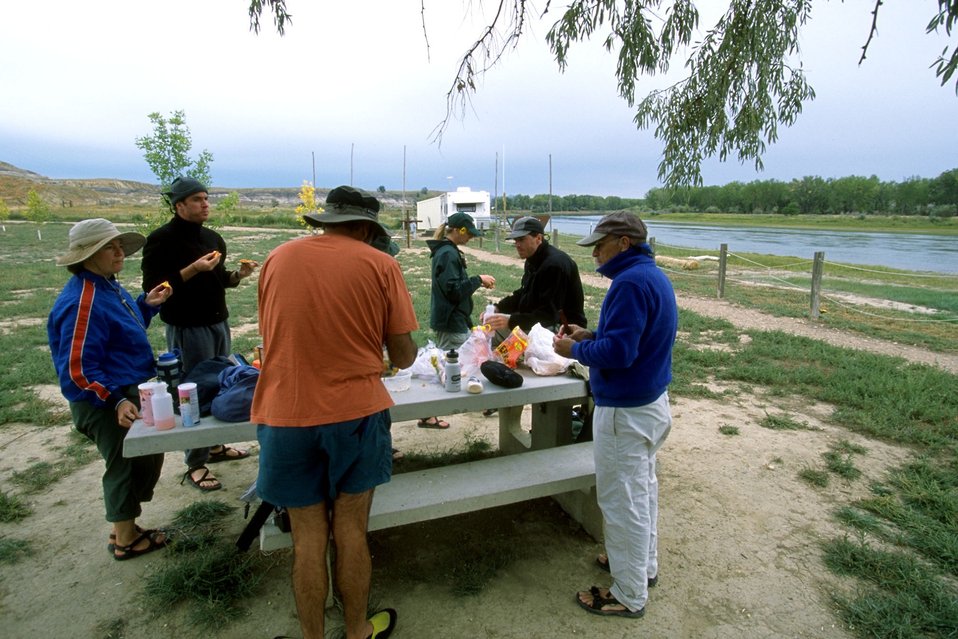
Visitor use at Coal Banks Landing on the Upper Missouri River